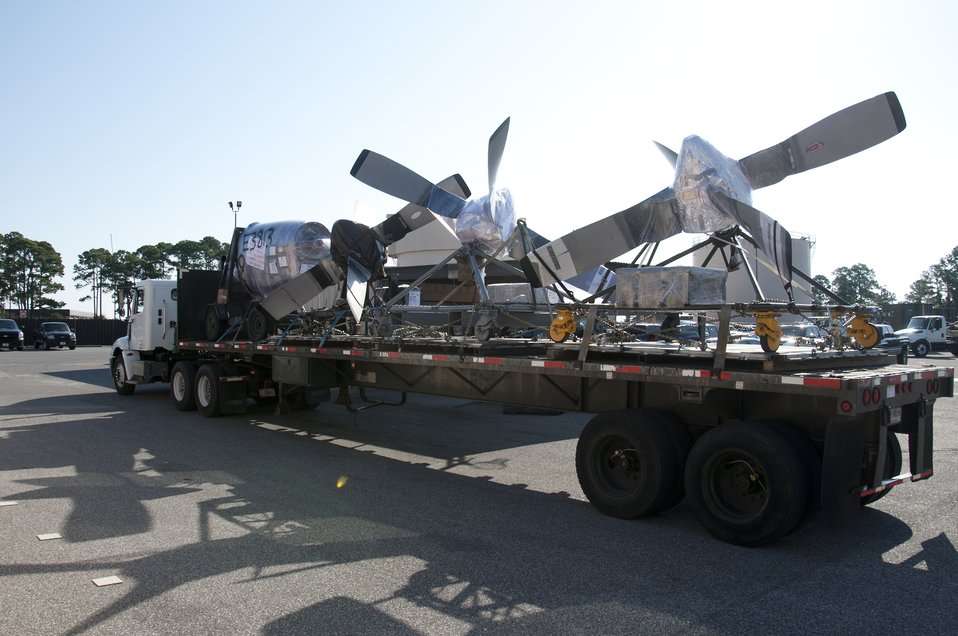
Tropical Storm Preparation

A truck moves various aircraft parts off-base in preparation for Tropical Storm Isaac at Hurlburt Field, Fla., Aug. 26, 2012. Hurlburt Field assets were being evacuated as Tropical Storm Isaac approaches the Gulf Coast region.